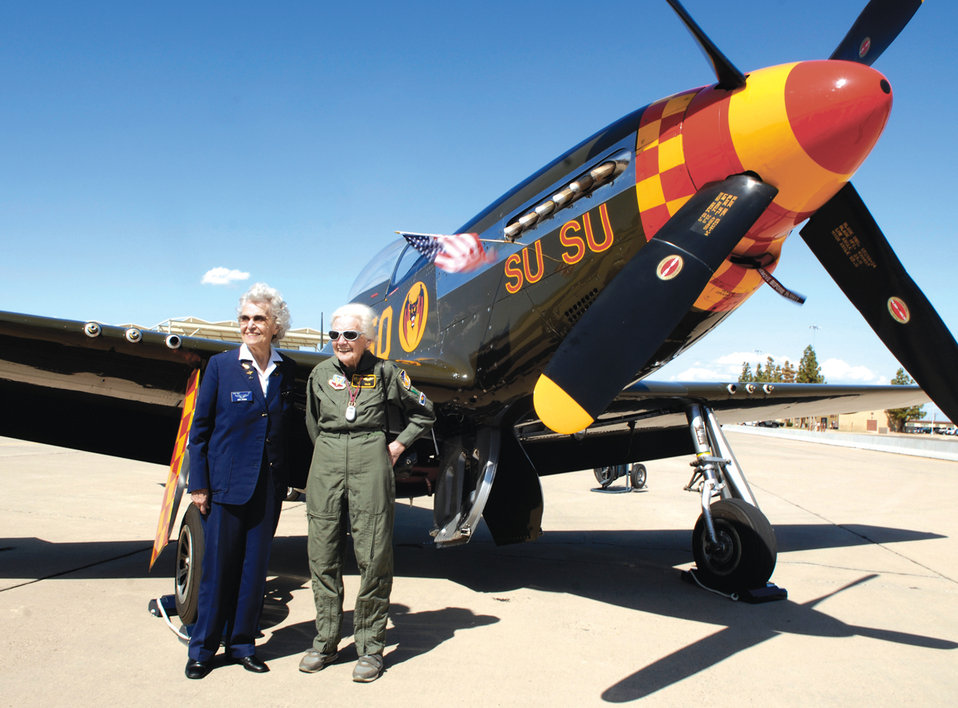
WASP celebrate Women's History Month

Geri Nyman (left), and Betty Blake, members of the Women Air Service Pilots, pose for photographs March 4, 2010, in front of a P-51 Mustang near the 56th Operations Support Squadron on Luke AFB, Ariz. Ms. Nyman and Ms. Blake are members of the WASP.